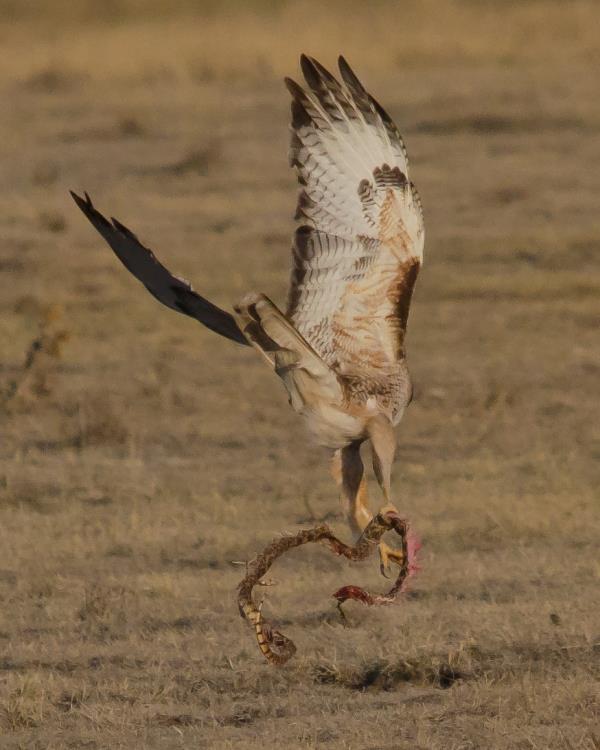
Red-tailed Hawk Grabs Breakfast

Credit: Kimberly Tamkun / USFWS

Photo Contest Entry #198